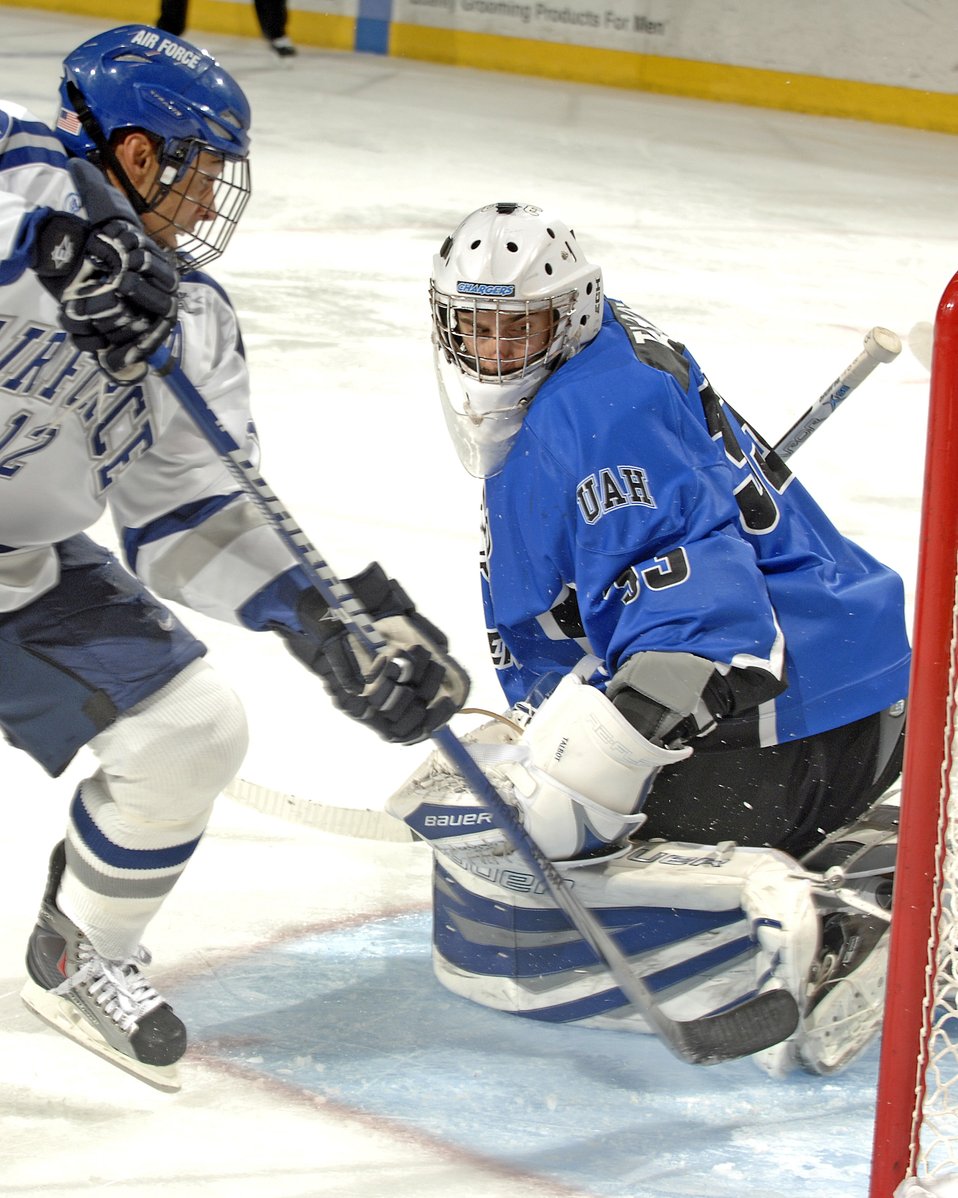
Falcons get out-Charged!

U.S. Air Force Academy senior Matt Fairchild puts his first goal of the year past Charger goalie Cameron Talbot to put the Falcons up 2-1 in the second period Oct. 17, 2009, at the Cadet Ice Arena near Colorado Springs, Colo.. The University of Alabama-Huntsville Chargers held off the Falcons for a 4-2 win.